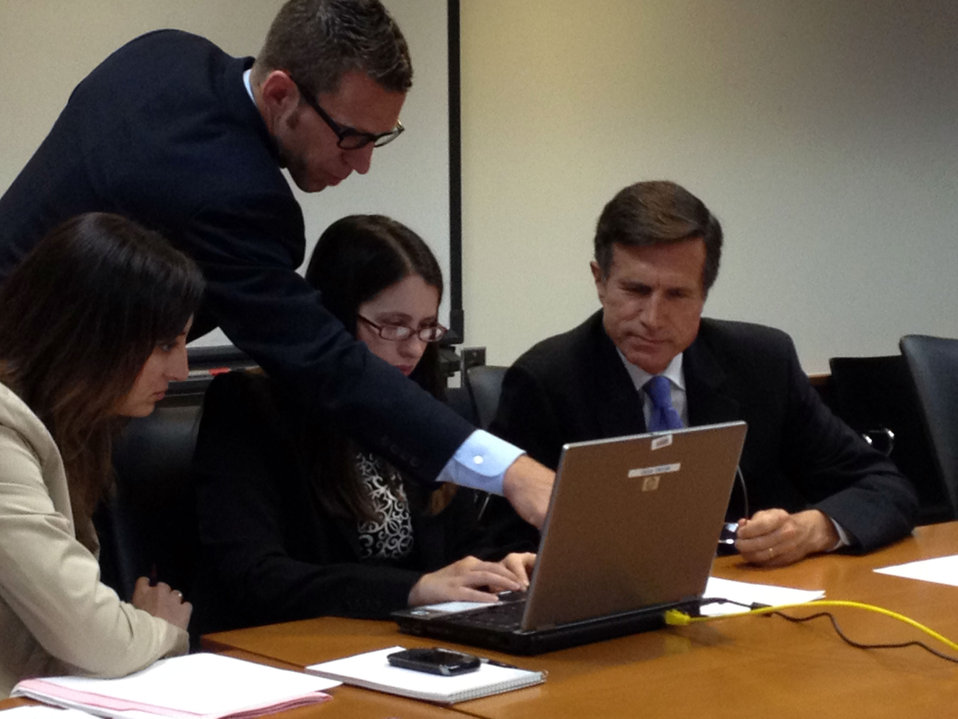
Assistant Secretary Blake Responds to Your Facebook Questions

Assistant Secretary of State for South and Central Asian Affairs Robert O. Blake, Jr., responds to questions during a live Facebook chat at the U.S. Department of State in Washington, D.C., on June 11, 2012.